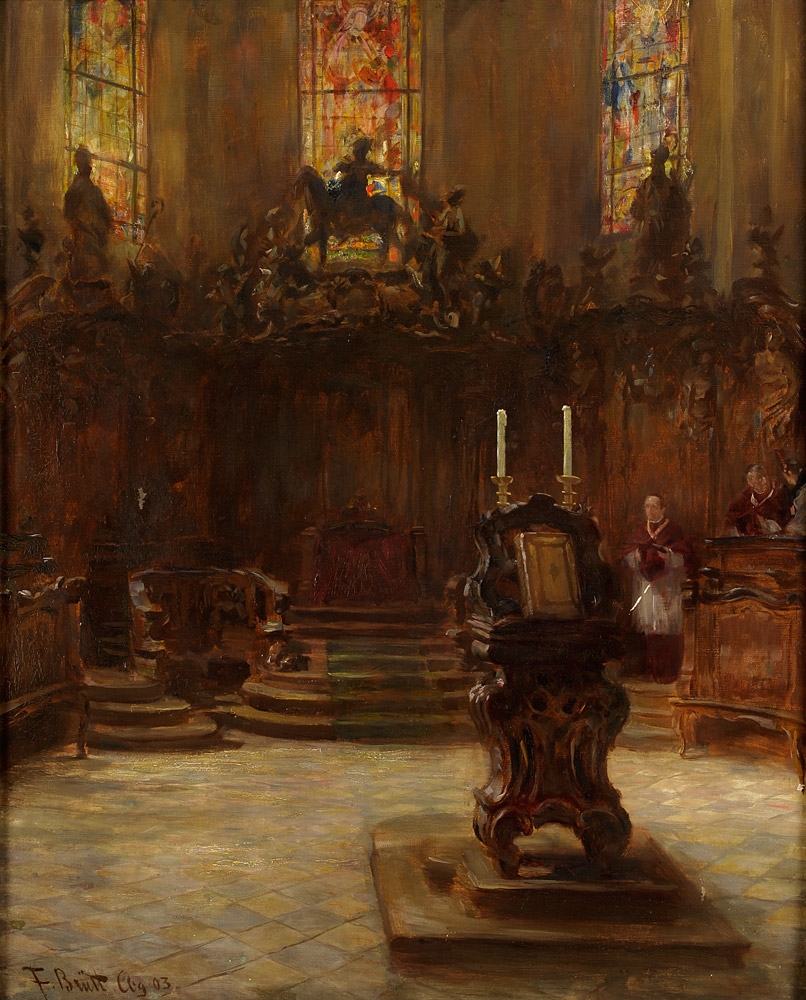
Chorgestühl im Dom zu Mainz. Signiert. Datiert (19)03. Öl/Lwd., 82 x 67 cm